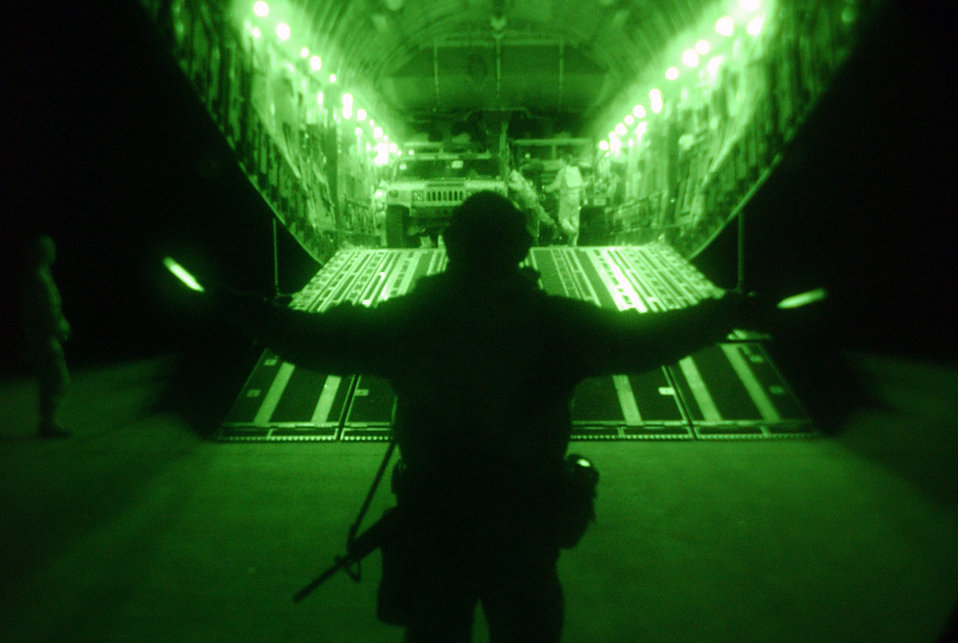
Night cargo

OPERATION IRAQI FREEDOM -- Master Sgt. Gerritt McCrory of the 86th Expeditionary Contingency Response Group marshals cargo and people from a C-17 Globemaster III aircraft during night operations March 30 at an airfield in northern Iraq.